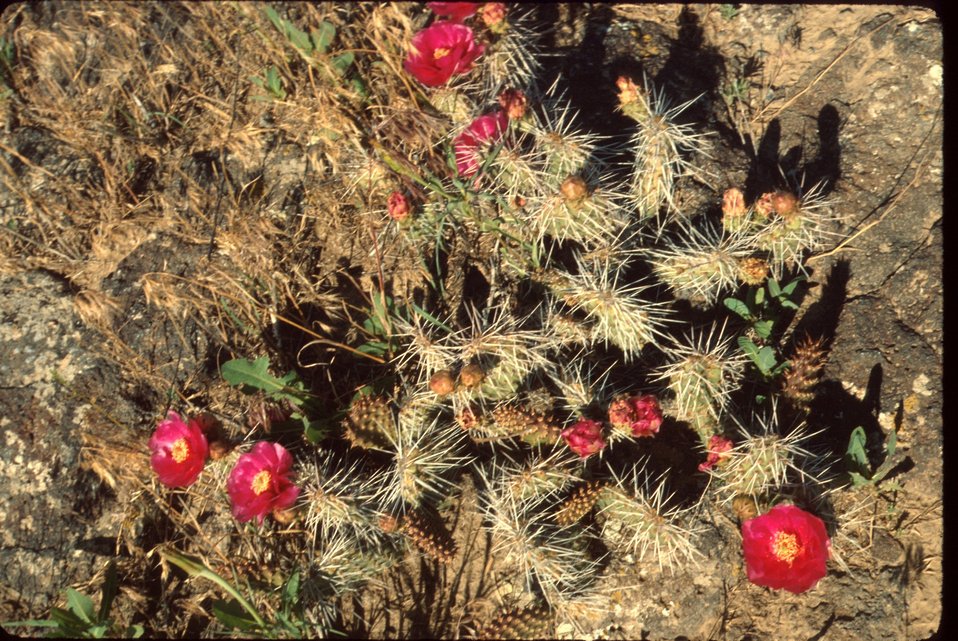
Prickly Pear Cactus Opuntia, wildflower